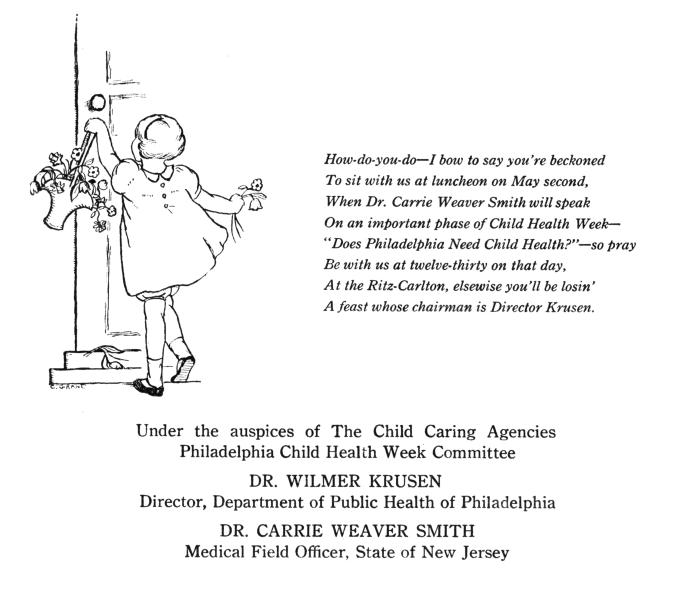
This was an announcement/invitation to a lecture given during 'Child Health Week' activities in Philadelphia, Pennsylvania. The original image was scanned from a glass lantern slide donated by the Minnesota Department of Health, and is contained in a historical collection of notices, as well as photographs, devoted to observances of 'Child Health Day' in the United States.